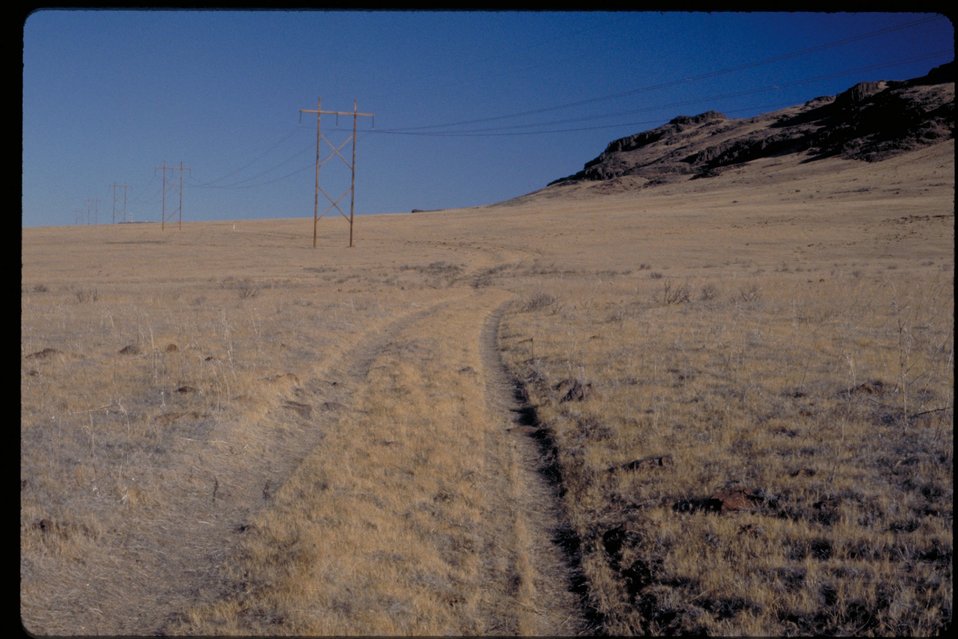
Oregon Trail near Teapot Dome Lower Snake River District